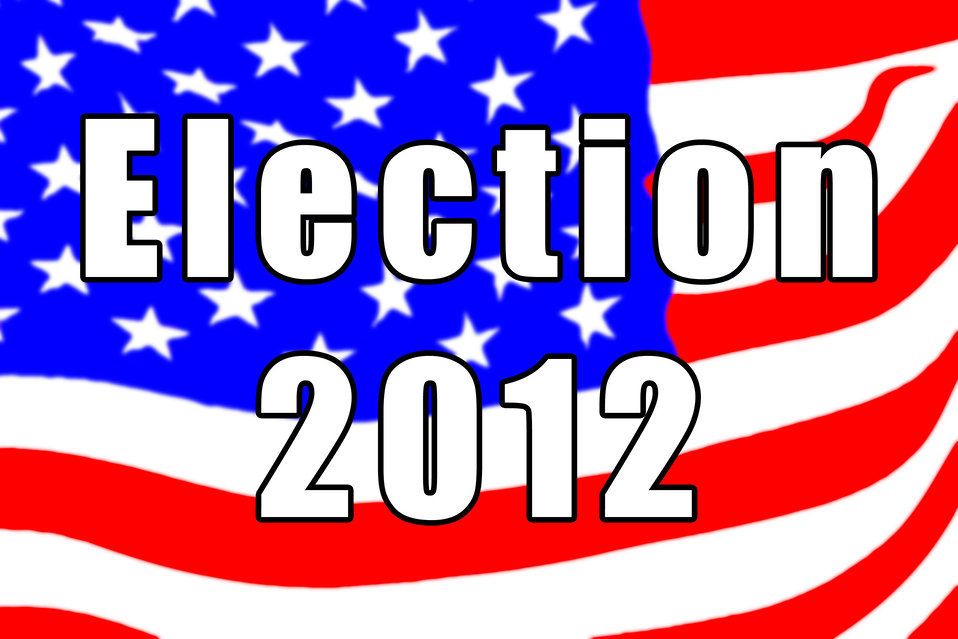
Us election 2012

Image about the united states presidential election of 2012.